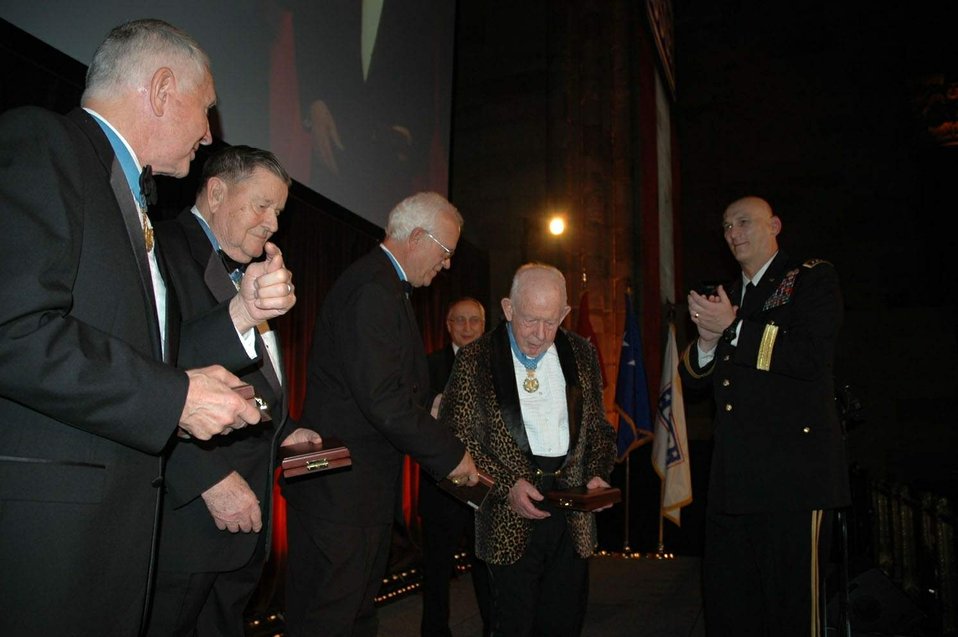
USO officials honor 5 Air Force Medal of Honor recipients

USO officials honored the only living Air Force Medal of Honor recipients at the USO of Metropolitan New York's 48th Annual Armed Forces Gala and Gold Medal Dinner Dec. 9, 2009 in New York City. The USO's Distinguished Service Award was presented to Col. Leo K. Thorsness (from left), Col. Joe M. Jackson, Col. James P. Fleming and Col. Bernard F. Fisher. Colonel George E. Day was also honored, but was not at the present at the event. Army Gen. Raymond T. Odierno (far right), the top U.S. commander in Iraq, assisted with the presentation, and also received the USO's Distinguished Service Award.